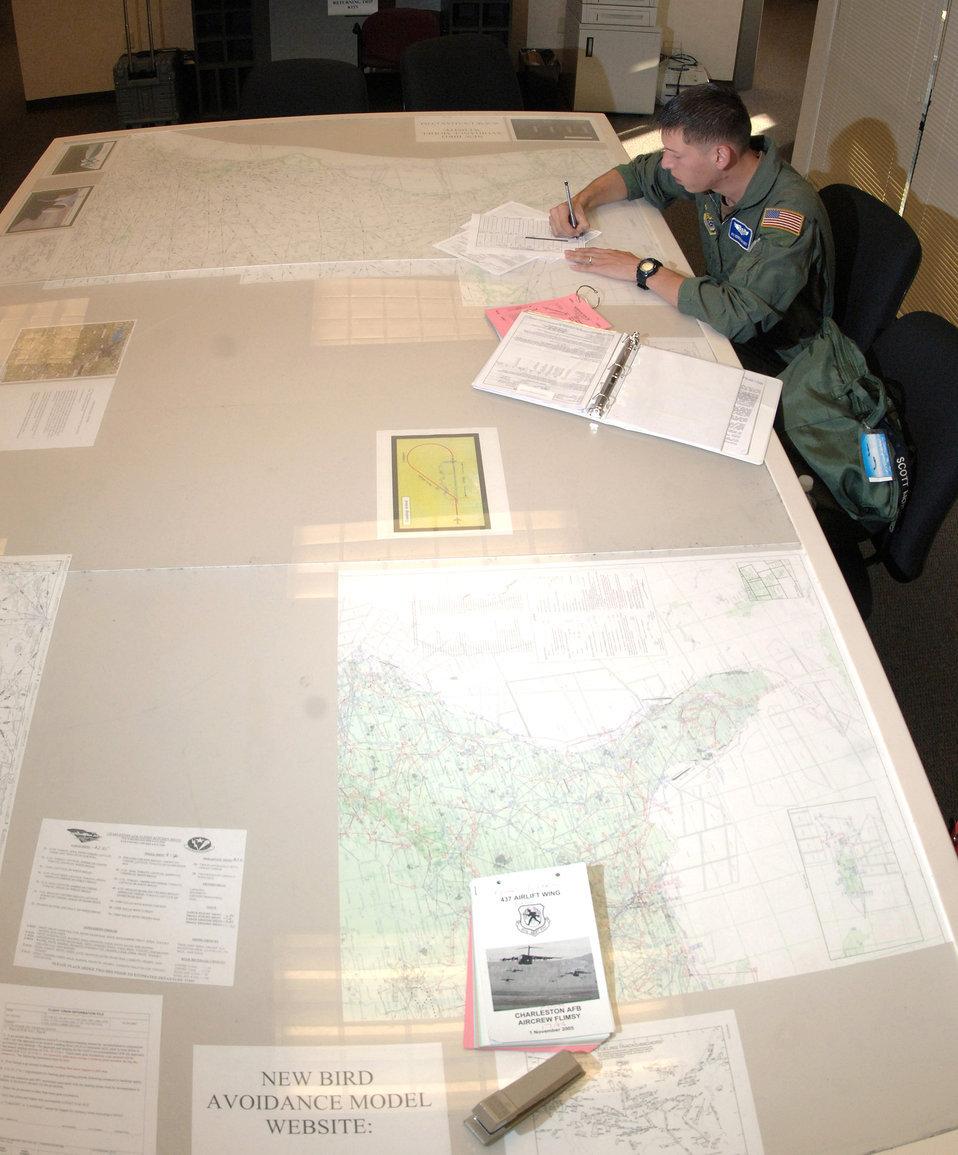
Loadmaster

Airman 1st Class Derrick Maloney reviews mission history prior to his C-17 Globemaster III training mission Oct. 26 at Charleston Air Force Base, S.C. Airman Maloney is a loadmaster with the 17th Airlift Squadron.